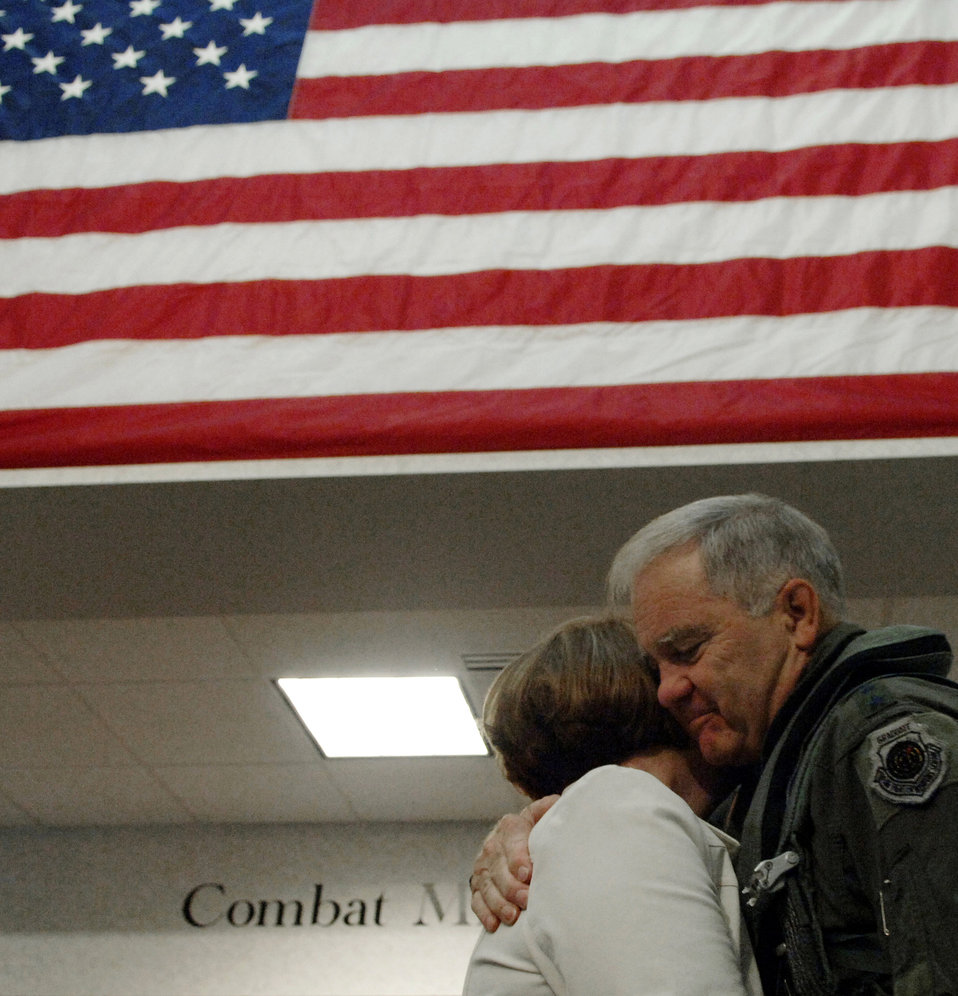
Final flight

Gen. Ronald E. Keys, former commander of Air Combat Command, gives his wife Lisa a hug as he prepares for the final flight of his military career Sept. 28 at Langley Air Force Base, Va. General Keys is scheduled to retire Nov. 1 after 40 years of military service.